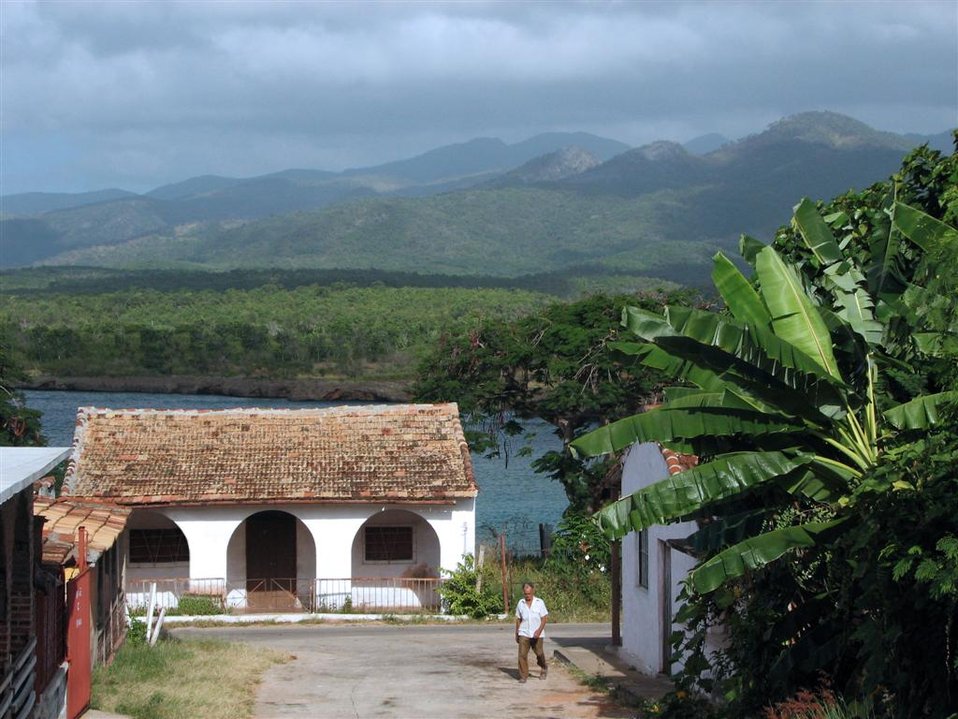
La Boca town and Escambray mountains in Trinidad de Cuba